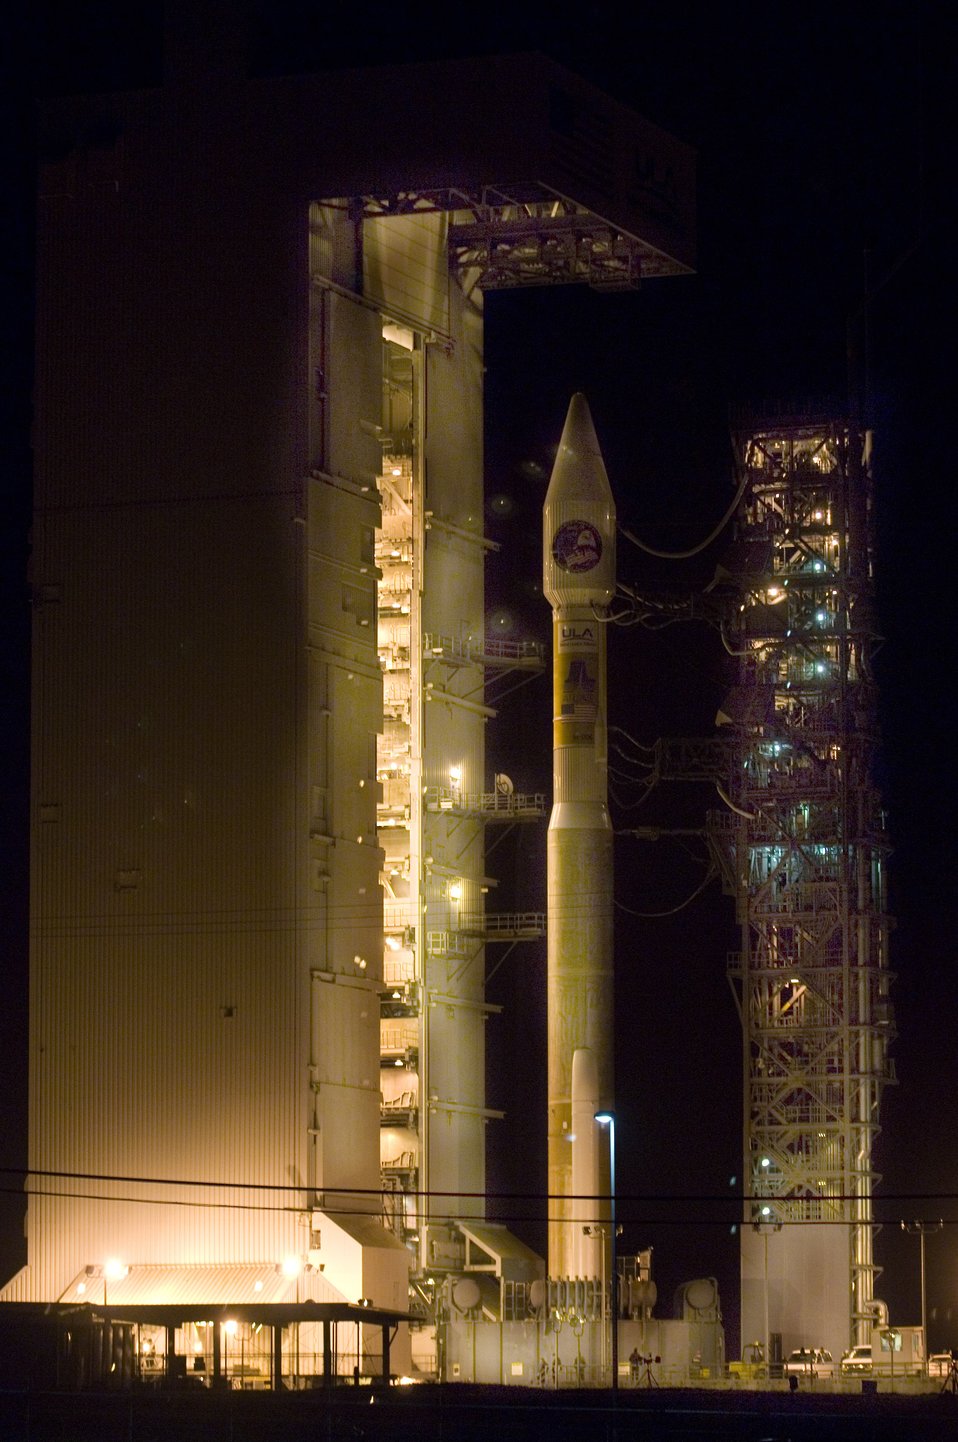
Vandenberg Airmen launch Atlas V rocket

An Atlas V stands on Space Launch Complex-3 during its mobile servicing tower rollback on March 12. The Atlas launched at 3:01 a.m. PDT March 13 at Vandenberg Air Force Base, Calif. It carried a National Reconnaissance Office payload and was the first Atlas V to launch from the West Coast.